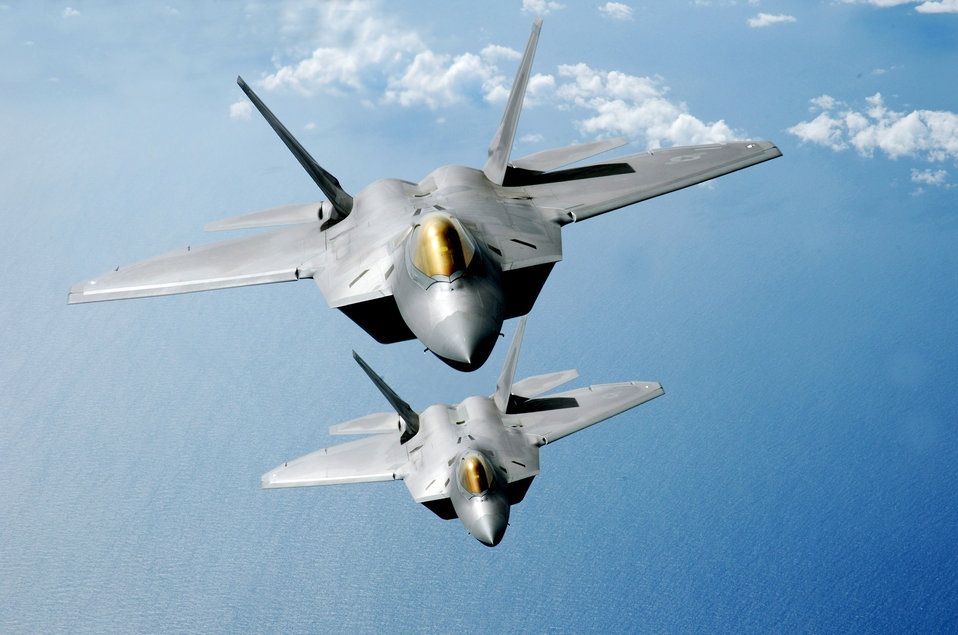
Prowling the Pacific

Two F-22 Raptors fly over the Pacific Ocean during a theater security mission March 9, 2009, as part of a deployment to Andersen Air Force Base, Guam. The Raptors are deployed from Elmendorf AFB, Alaska.